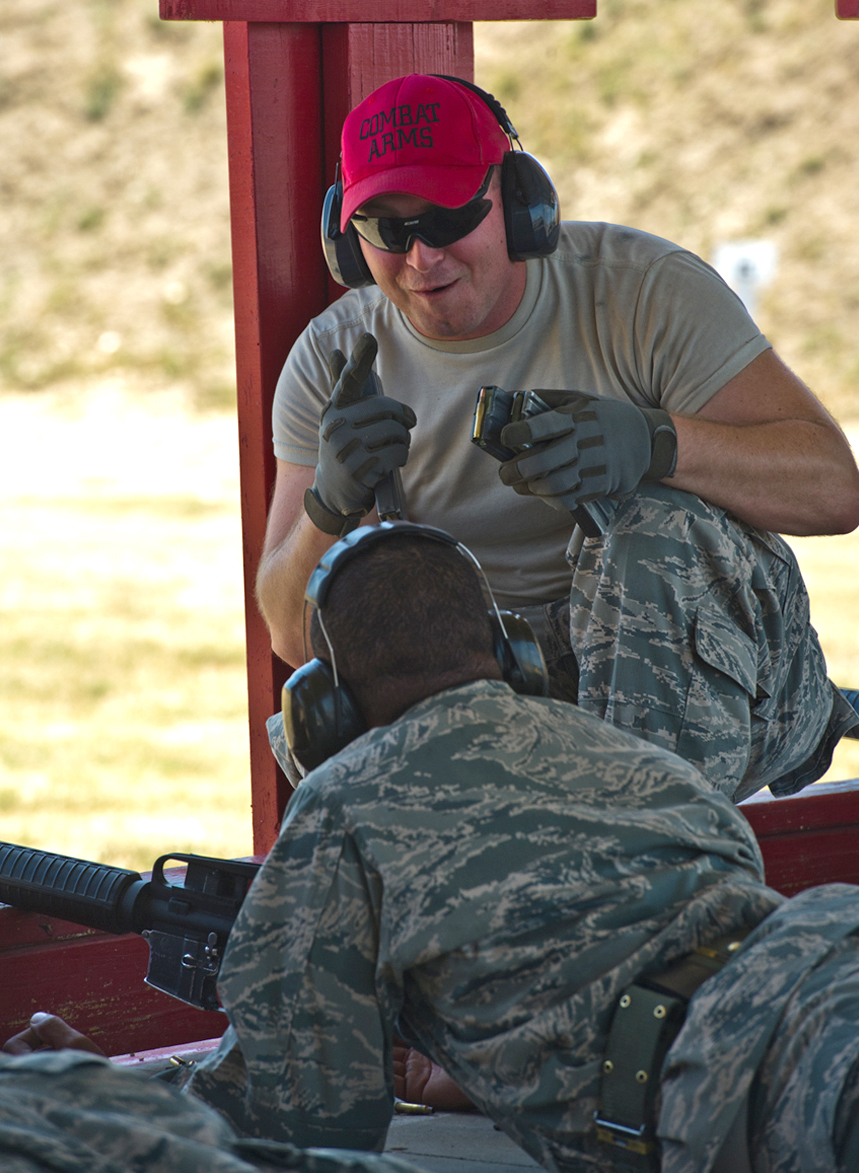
Weaponized

Basic trainees fire and qualify on using M-16 rifles during the combat arms training and maintenance course July 26, 2011, at Medina Annex in San Antonio, Texas. At CATM, basic military training trainees are taught the use of small arms and qualify with the M-16 rifle during their fifth week.